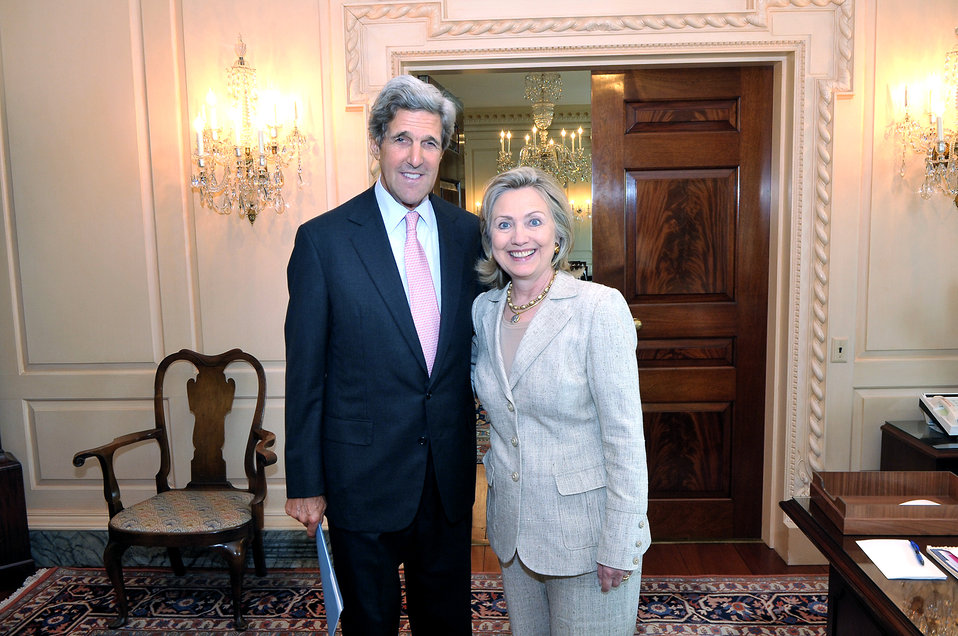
Secretary Clinton Meets With Senator Kerry

U.S. Secretary of State Hillary Rodham Clinton meets with Senator John Kerry at the U.S. Department of State in Washington, D.C., on August 4, 2010.